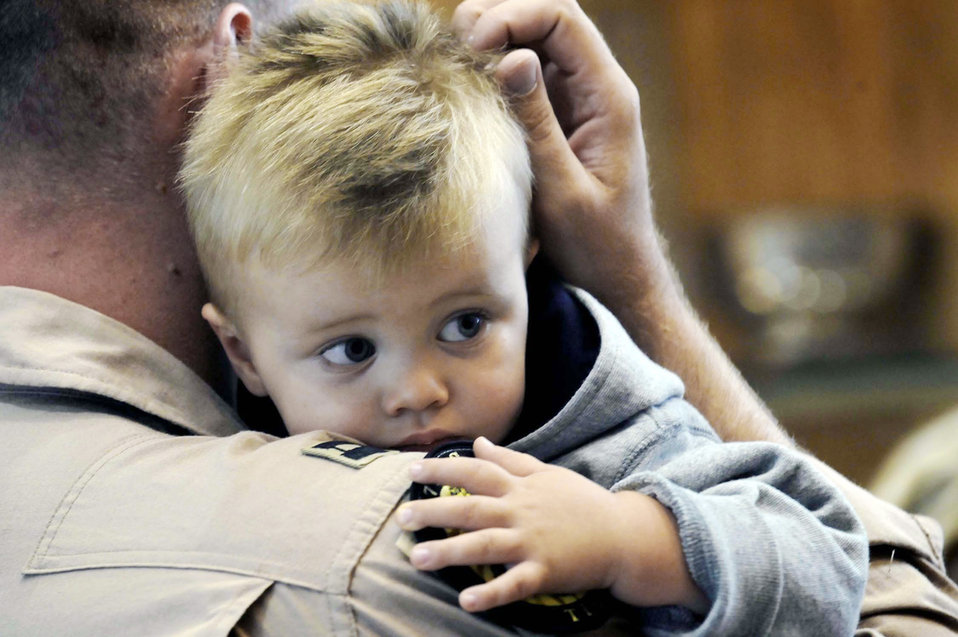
Airmen deploy to Southwest Asia

A weapons systems officer assigned to the 37th Bomb Squadron holds his son before deploying from Ellsworth Air Force Base, S.D. recently. Airmen representing various specialties deployed in support of operations in Southwest Asia.